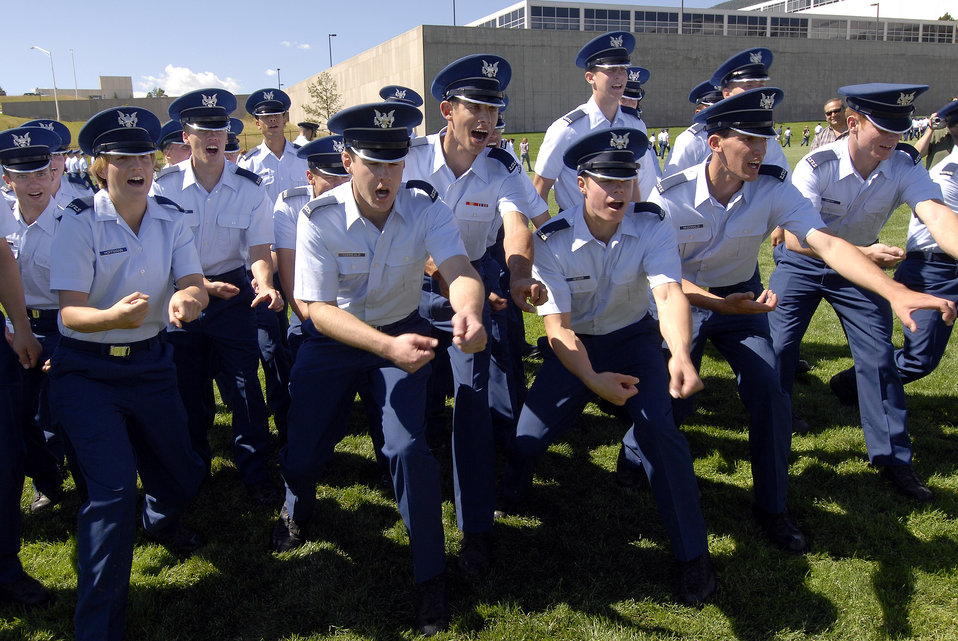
Acceptance Parade for Class of 2011

U.S. Air Force Academy Cadet 4th Classmen of Cadet Squadron 40 perform a squadron chant in front of waiting family members after the Acceptance Parade Aug. 8 at the Academy in Colorado Springs, Colo. The Acceptance Parade marks the formal acceptance of the new cadets into the cadet wing.